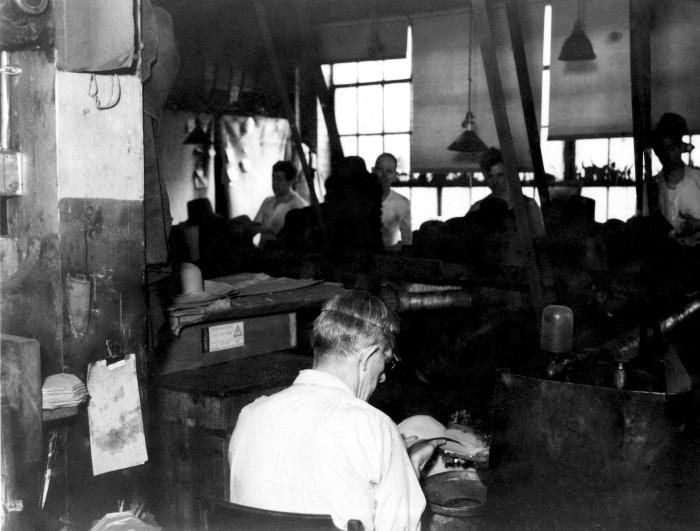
Provided by the Center for Disease Control's (CDC), National Institute for Occupational Safety and Health (NIOSH), this historic image, shot inside a Connecticut hat manufacturing plant, depicted a number of fur hat factory workers shaping felt into various hat shapes. None of the workers appeared to be wearing a filtered breathing mask, which in the confines of a factory that used mercury nitrate, would now be required. Working with 'carroted' fur, fixed with mercury nitrate, workers could be exposed to airborne mercury, especially when using steam, thereby, suffering the detrimental neurologic consequences from its inhalation. Using steam facilitated the airborne dissemination of this neurotoxic element.